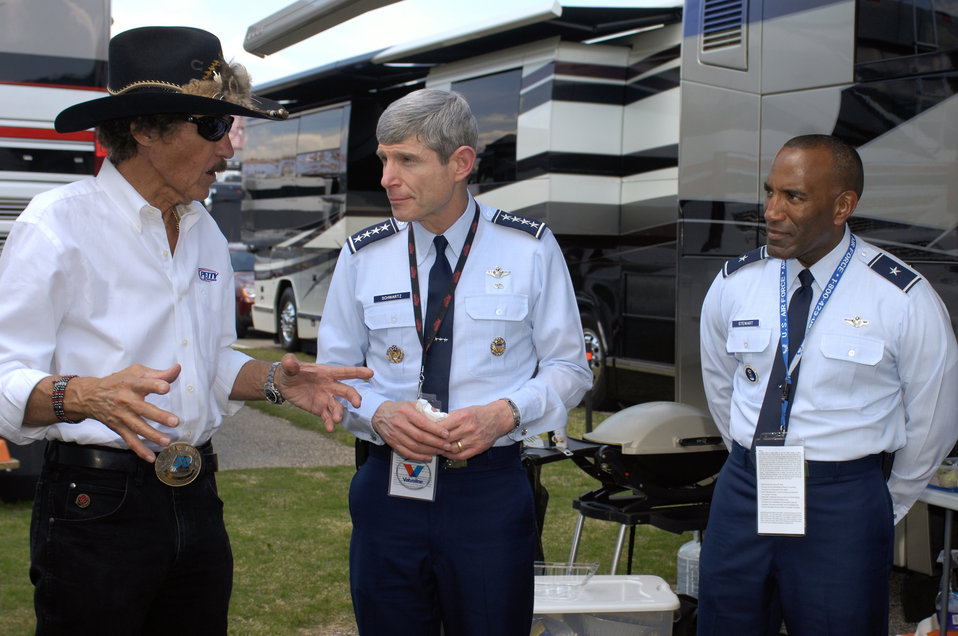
Air Force at Talladega

Air Force Chief of Staff Gen. Norton Schwartz (center) and Brig. Gen. A.J. Stewart, the Air Force Recruiting Service commander, talk to Richard Petty prior to the start of the NASCAR race April 26 at the Talladega Superspeedway in Talladega, Ala. The generals were at the race to watch the #43 Richard Petty Motor Sports car run. The car, driven by Reed Sorenson, featured the Air Force primary paint scheme for the first time.